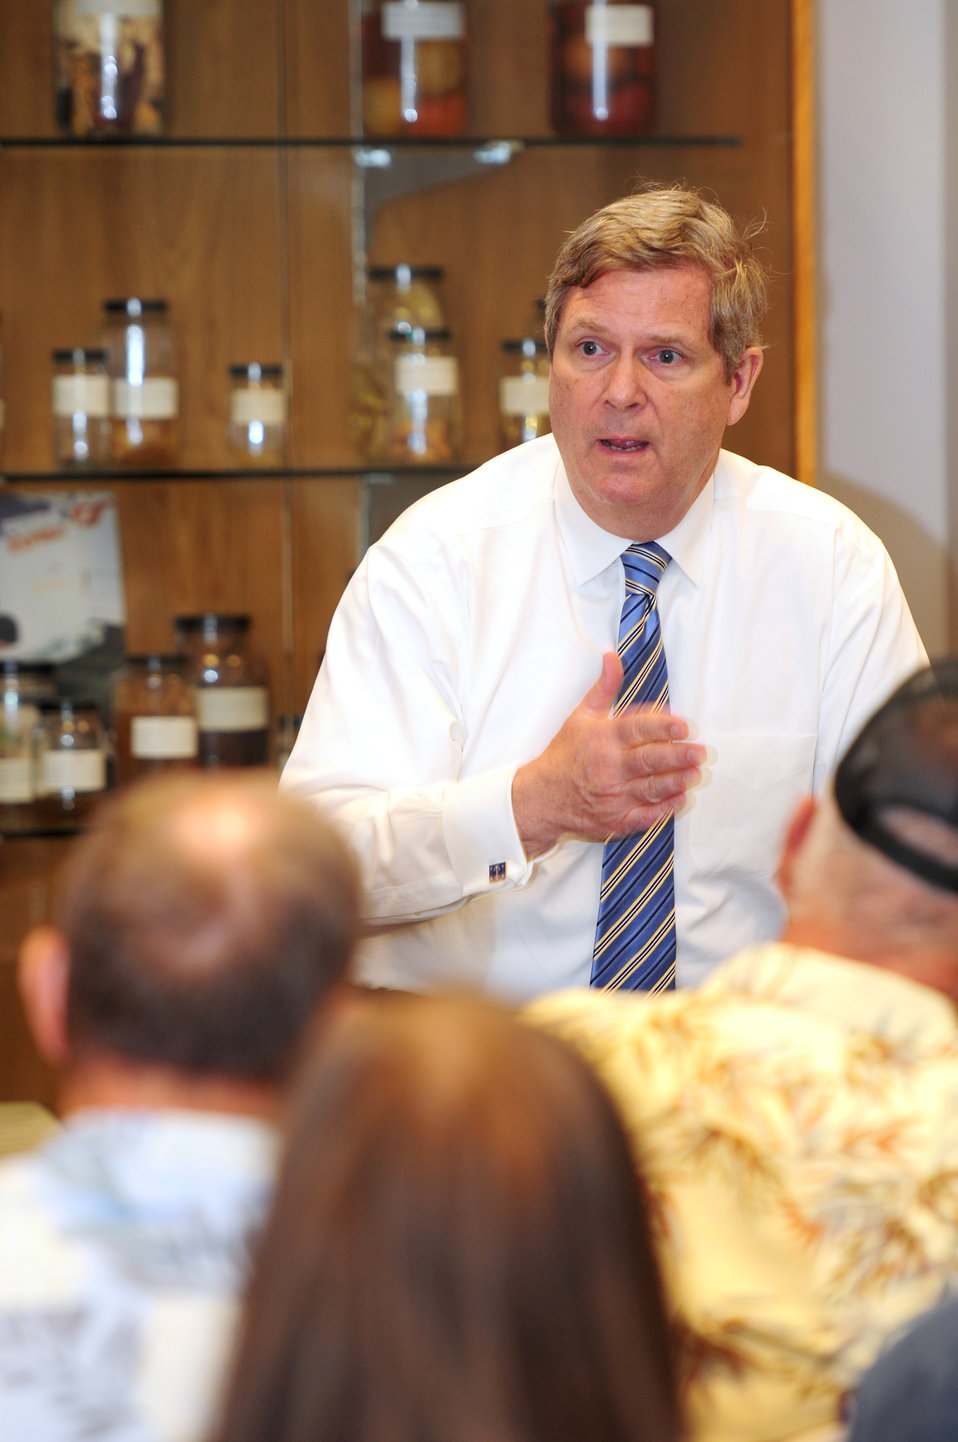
Agriculture Secretary Tom Vilsack speaks at a stakeholder meeting held at the State of Hawaii, Department of Agriculture Plant Quarantine Building in Honolulu, Hawaii, on Tuesday, January 10, 2012, to discuss USDA programs, agricultural challenges in Hawaii, and alternative energy.